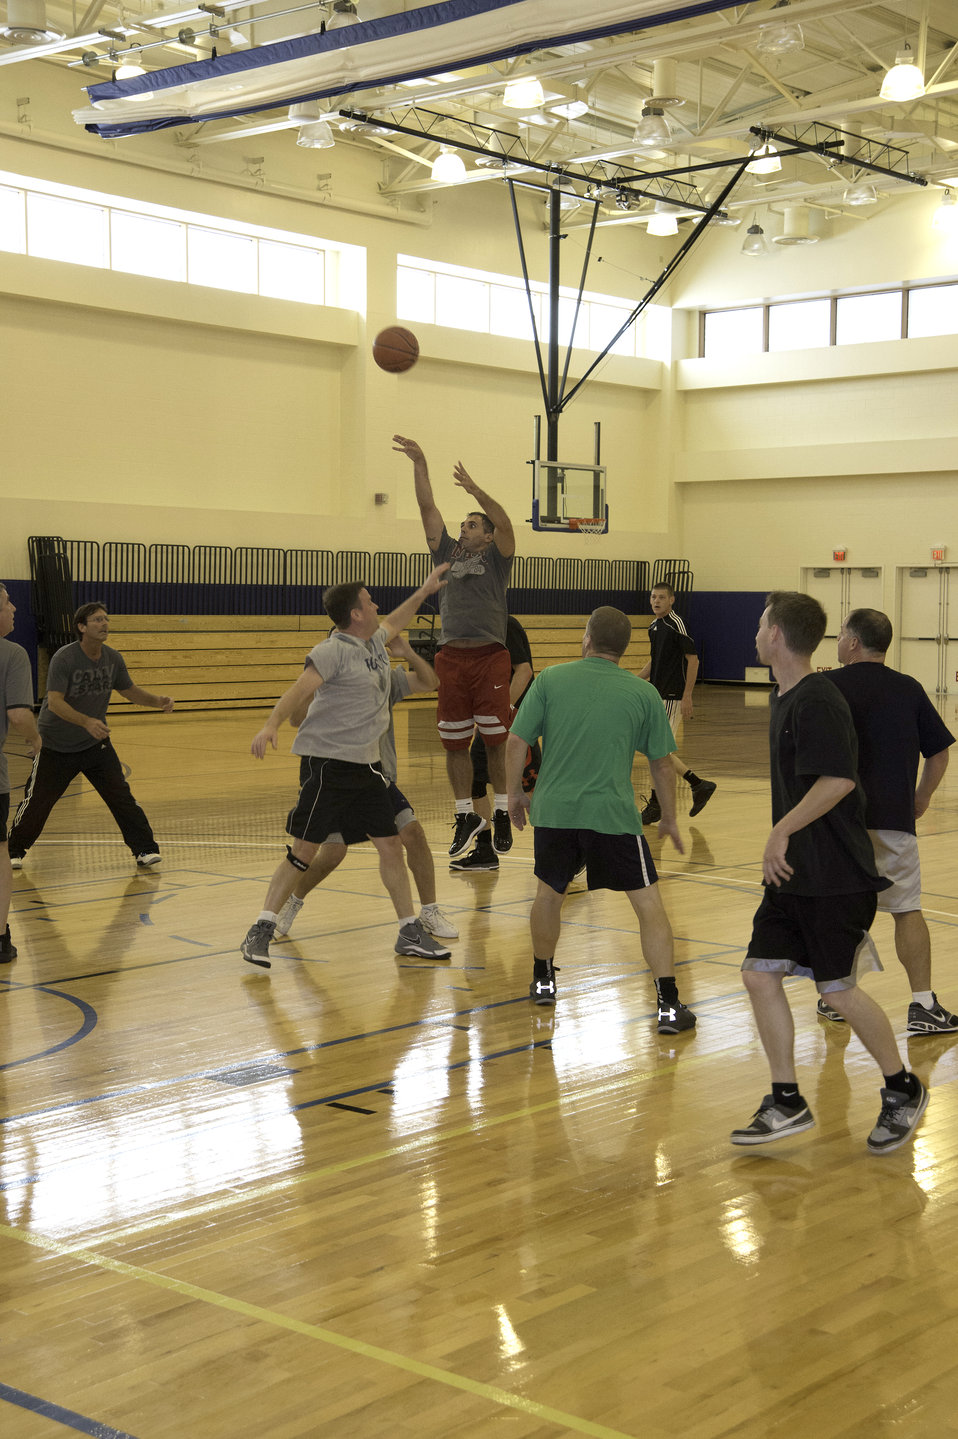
As part of the Mohegan Tribe’s Health and Wellness initiative, members of the Mohegan Tribe and employees of the Mohegan Tribal Government use the basketball court at the Mohegan Tribe Community Center and Government Building in Uncasville, CT on Nov. 18, 2013. A U.S. Department of Agriculture (USDA) Rural Development (RD) Community Facility Loan was provided to the Mohegan Tribe for the construction of the Mohegan Tribe Community Center and Government Building in Uncasville, CT. USDA’s RD Community Facilities Programs makes and guarantees loans to develop essential community facilities in rural areas and towns of up to 20,000 in population. Loans and guarantees are available to public entities such as municipalities, counties, parishes, boroughs, and special-purpose districts, as well as to non-profit corporations and tribal governments. The 160,000 square foot building Center hosts an exhibit celebrating federal recognition, history of Mohegan Chiefs, a new Library and Archives space, new Arts and Crafts room, a new gymnasium, and a new community room to enjoy food and family. The Center will continue the Tribe’s plan for growth and meeting the needs of its members.